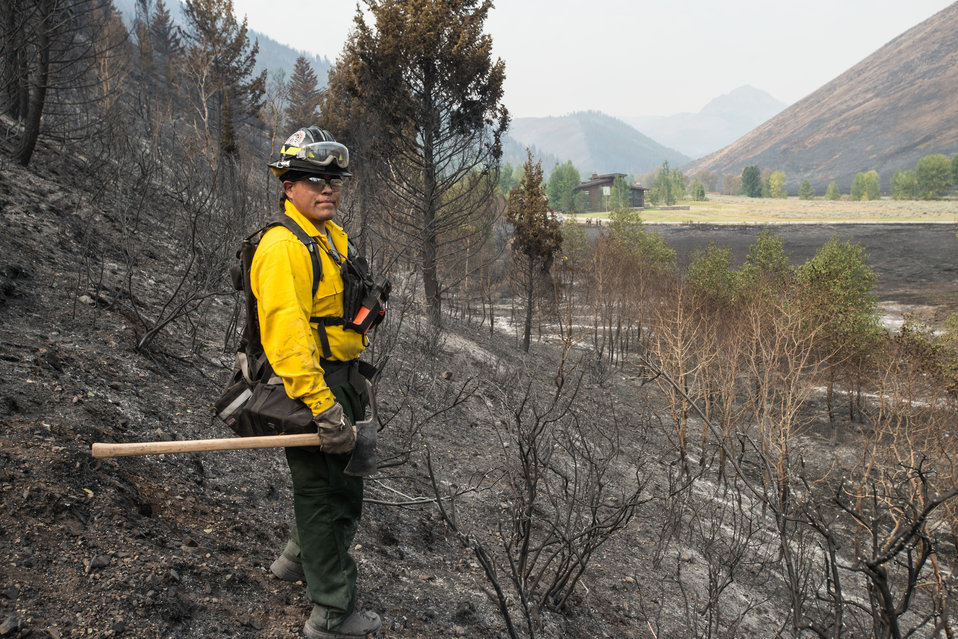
Thanks to the efforts of Wildland Firefighters, support crews and other first responders, homes and residential communities were (with few exception) saved from major damage, from the Beaver Creek Fire, near Hailey, ID, in the interface of U.S. Department of Agriculture (USDA) Forest Service (FS) and Sawtooth National Forest and Bureau of Land Management (BLM) lands, on Wednesday, Aug 21, 2013. In this community, major sections of hillside were charred, some suffered burnt trees, grass lands and fences.